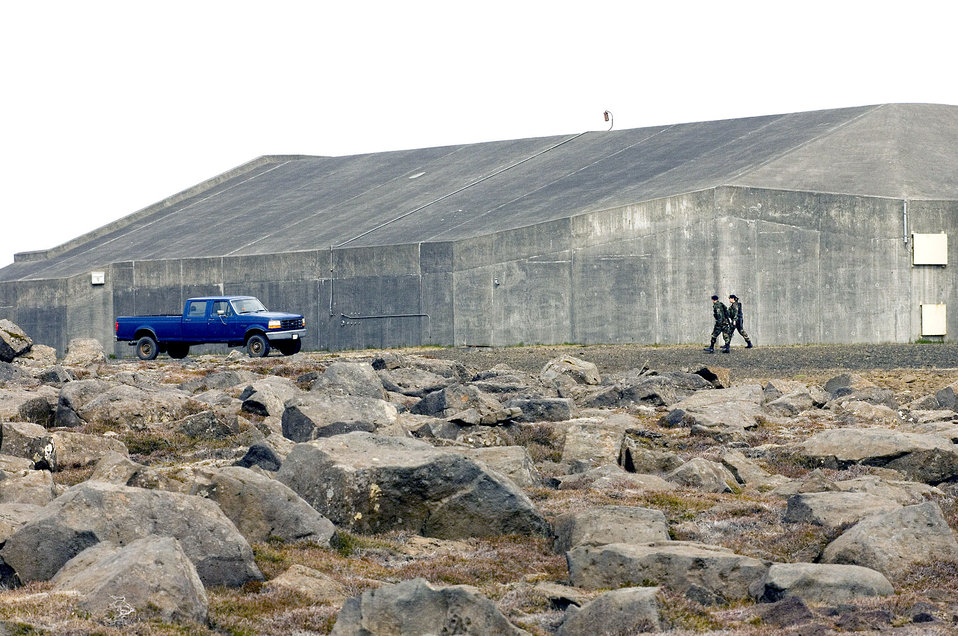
Drawdown at Keflavik

Staff Sgt. Ryan Blume and Airman 1st Class Alisha Torgerson check a protected aircraft shelter at Naval Air Station Keflavik, Iceland, on Monday, May 22, 2006. Airmen and Sailors are reducing operations after more than 50 years of U.S. presence at the base. Sergeant Blume, from Nealsville, Wis., and Airman Torgerson, from Oxnard, Calif., are security force Airmen with Keflavik's 85th Security Forces Squadron.